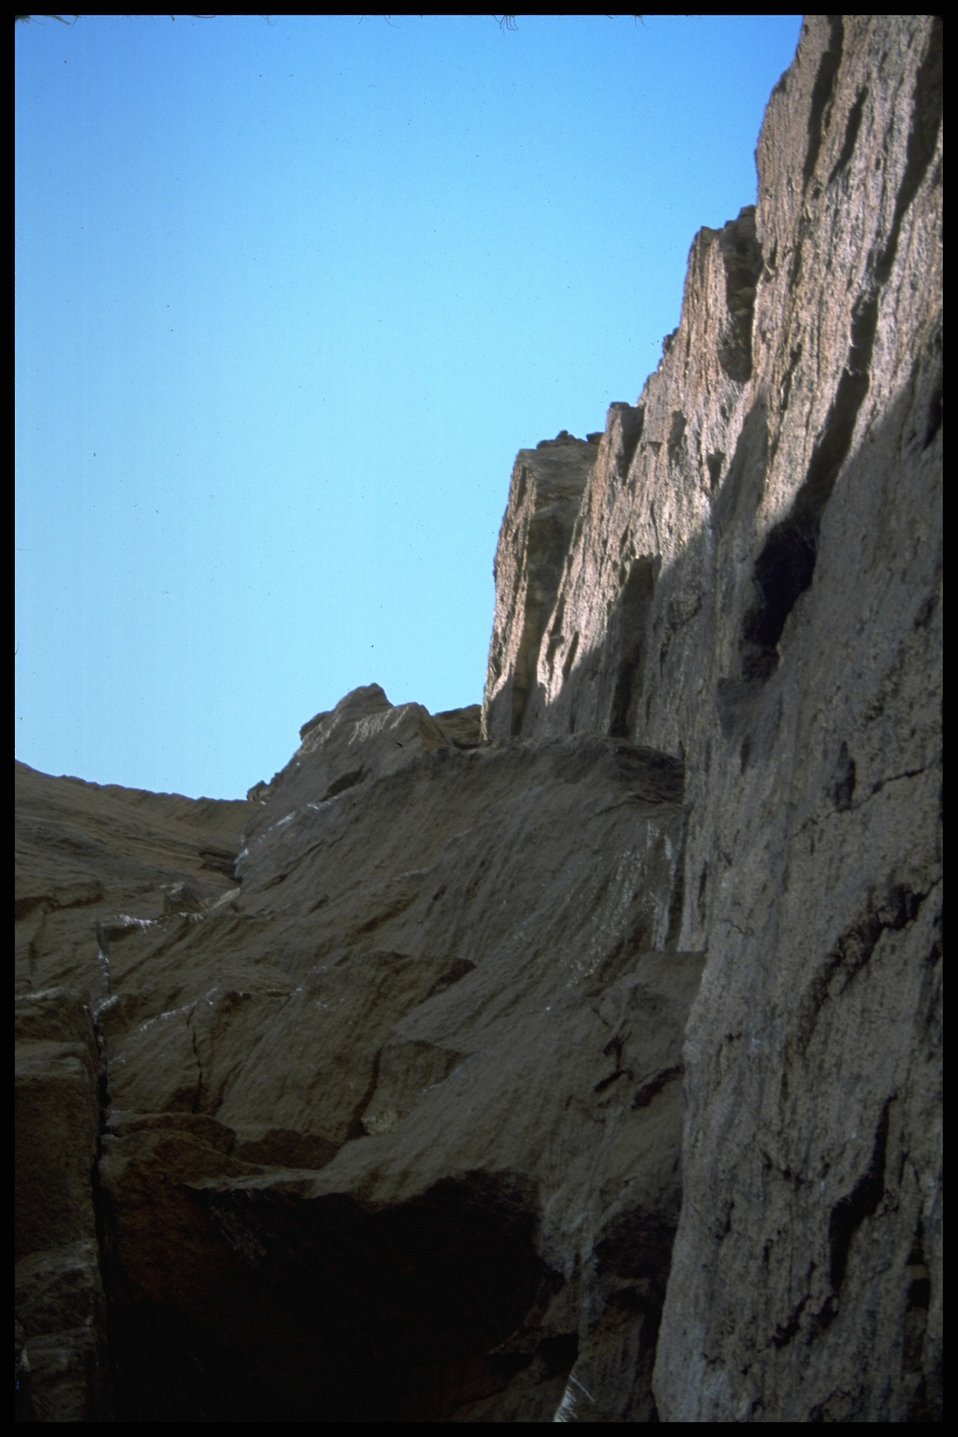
Scenic view, Ft. Rock, Lakeview District.